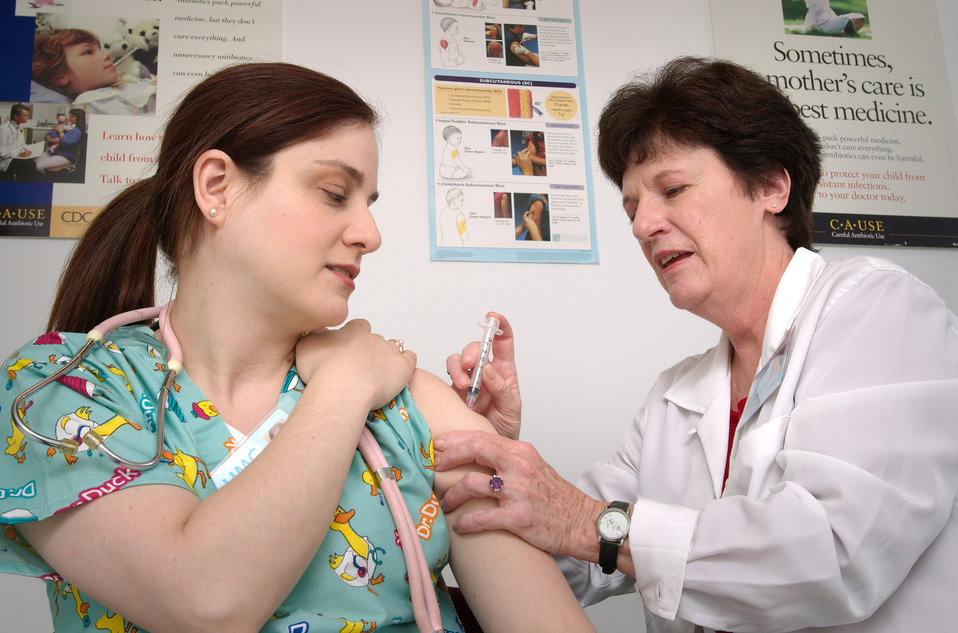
This 2006 photograph depicted a nurse who was administering an intramuscular vaccination into the left shoulder muscle of fellow nurse, while stabilizing the injection site with her free hand.The following pertains to healthcare workers:INFLUENZA: